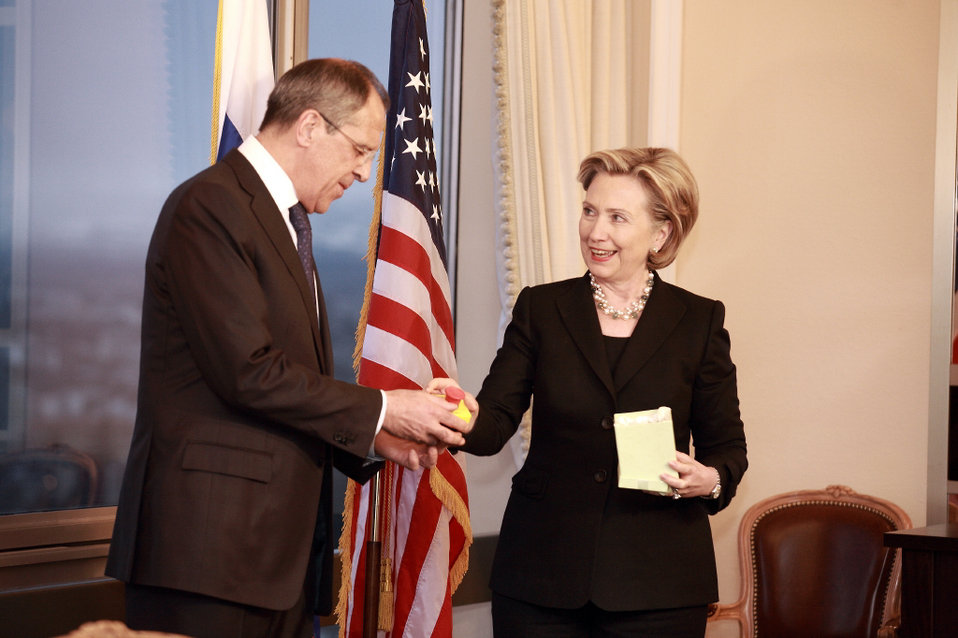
'Restart Button' offered by U.S. Secretary of State Hillary Rodham Clinton to Russian Foreign Minister Sergey Lavrov in Geneva, Switzerland March 6, 2009.